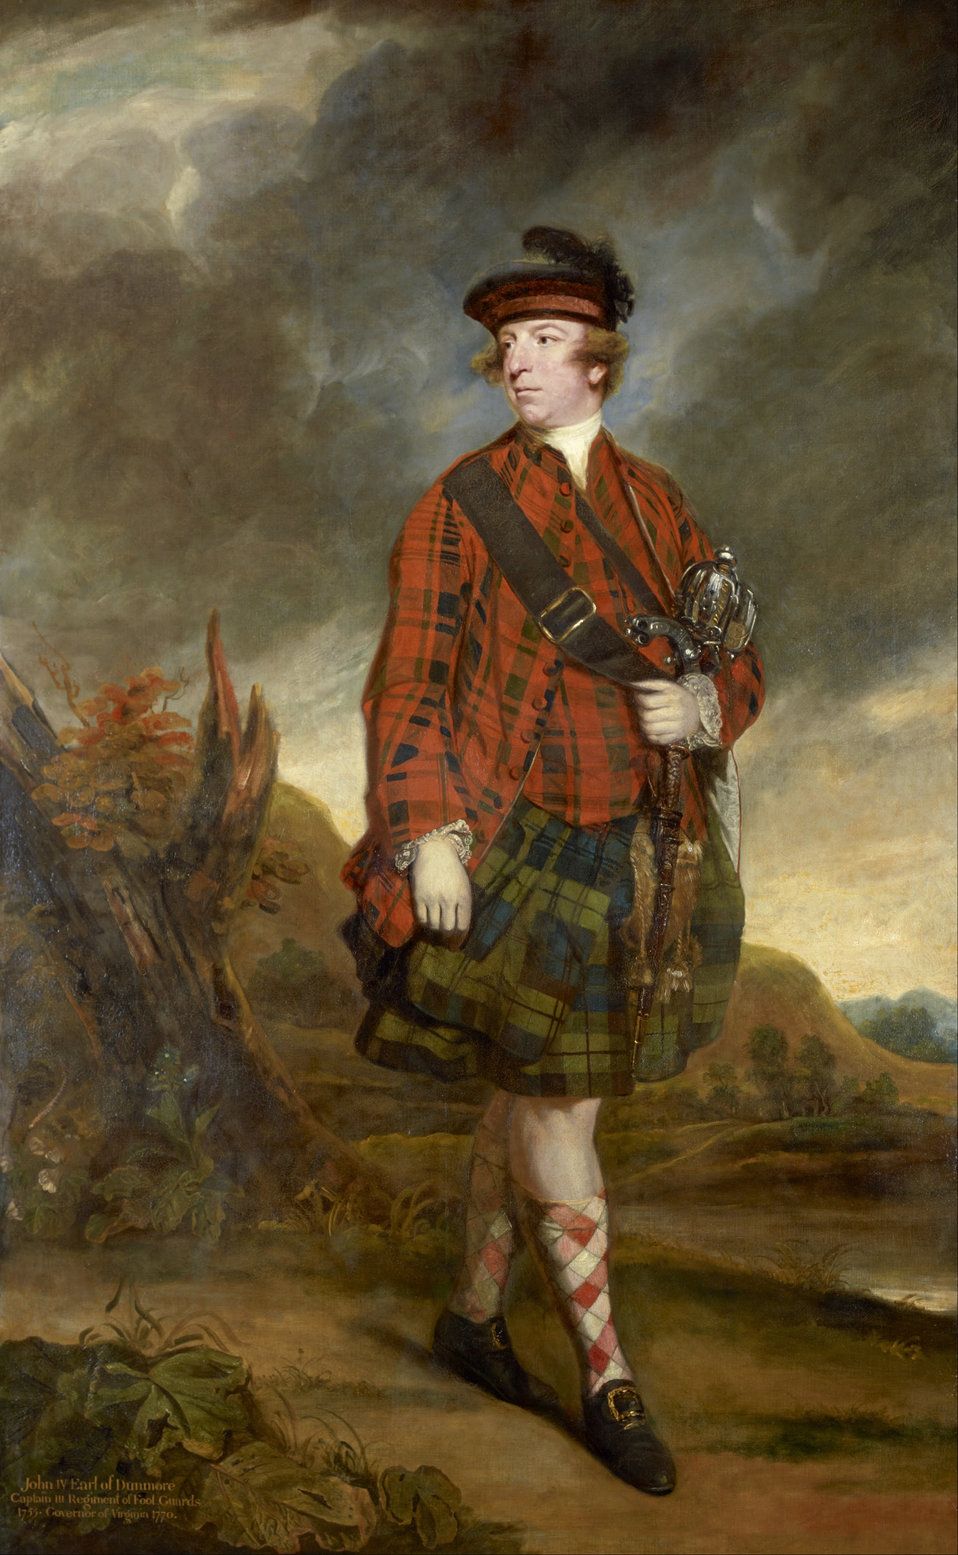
Sir Joshua Reynolds - John Murray, 4th Earl of Dunmore - Google Art Project